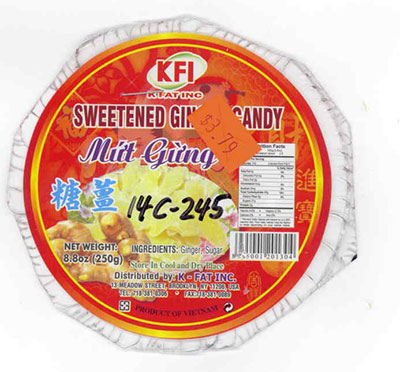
RECALLED - Sweetened Ginger Candy

February 3, 2014 – Product Recall – K-fat Inc. Issues an Alert on Undeclared Sulfites in Kfi Sweetened Ginger Candy.